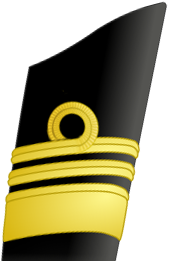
Updated Canada's Vice-Admiral
Category:Military rank insignia of Canada